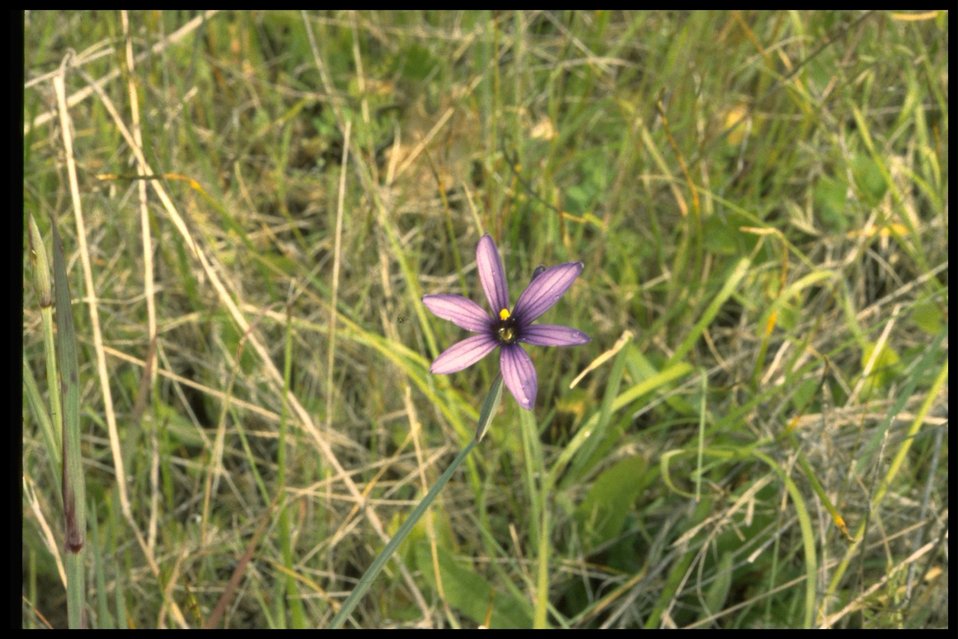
Farshot of Hitchcock's blue-eyed grass (Sisyrinchium hitchcockii).